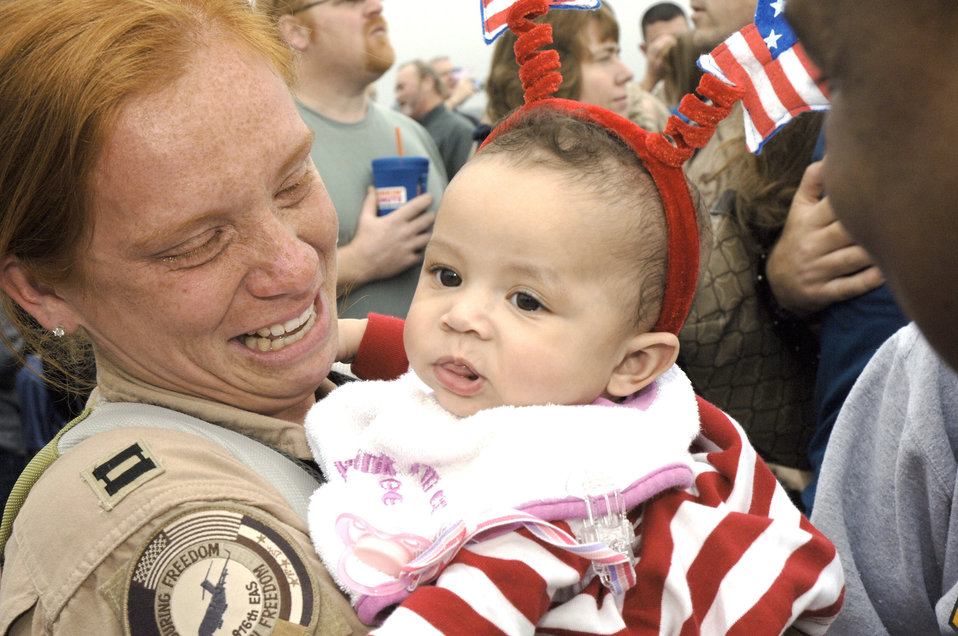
Charleston Airmen return from war

Capt. Jennifer Moore cries as she holds her daughter, Gabriella, after returning from a deployment Jan. 3 at Charleston Air Force Base, S.C. More than 130 Airmen from the 15th Airlift Squadron returned from their 120-day deployment in Southwest Asia. Captain Moore is assigned to the 15th Airlift Squadron.